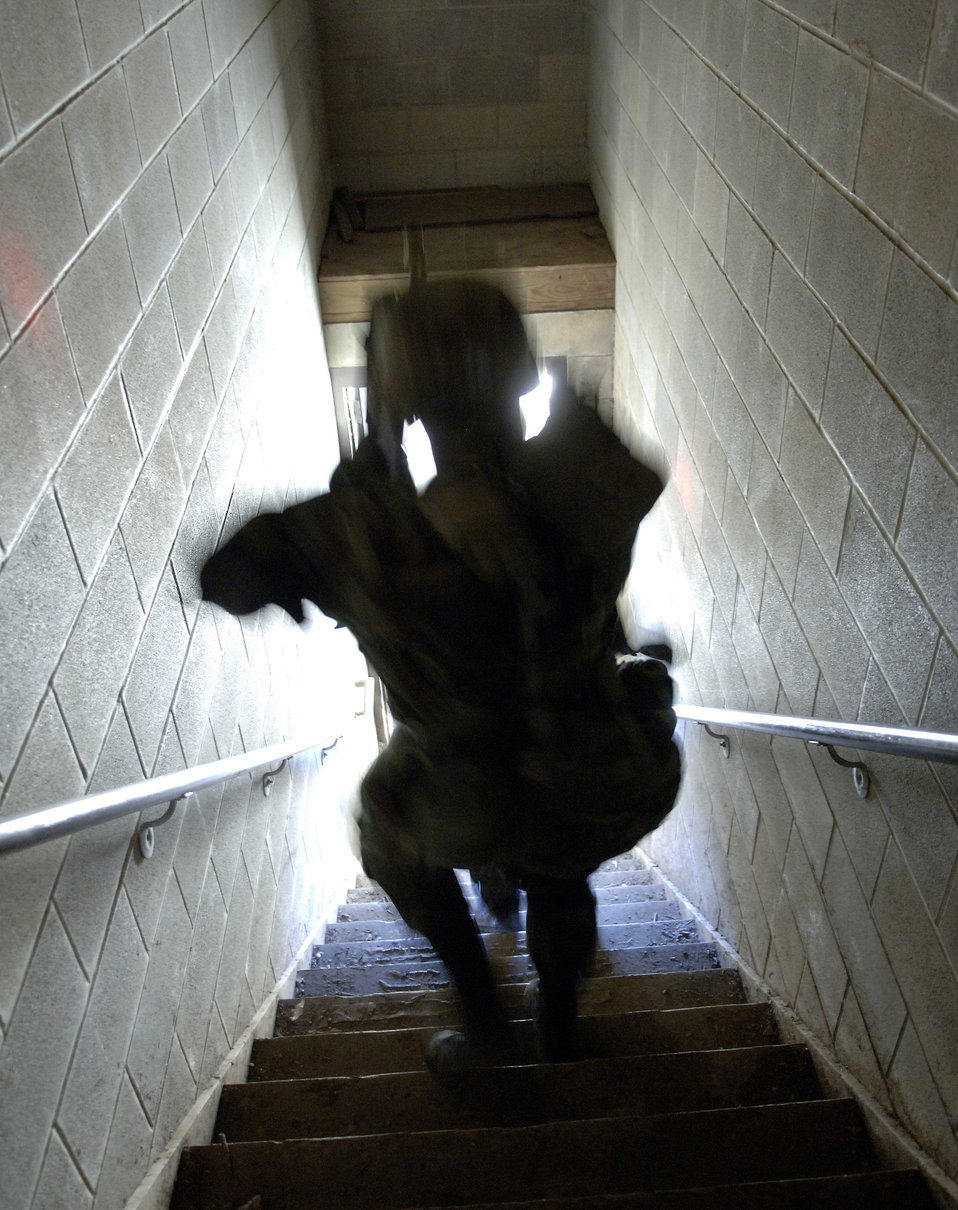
Military ops

LACKLAND AIR FORCE BASE, Texas (AFPN) -- Airmen clear a building during security forces technical training here Jan. 30. They were in a three-week phase that familiarizes Airmen with concepts and tactics used in basic military operations in urban terrain.